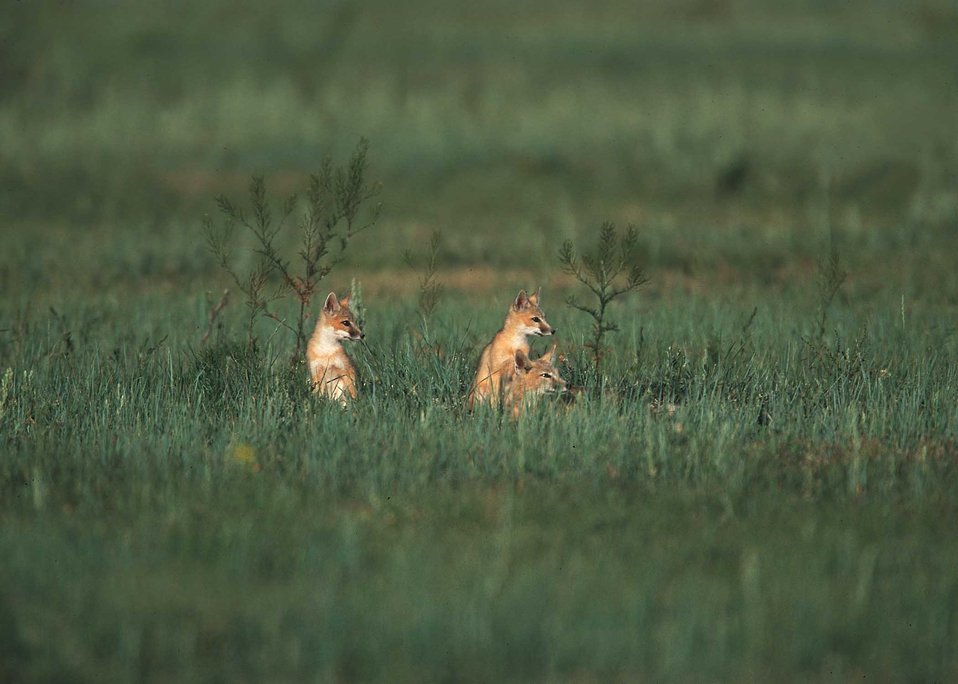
Swift Fox on Pawnee Grassland.